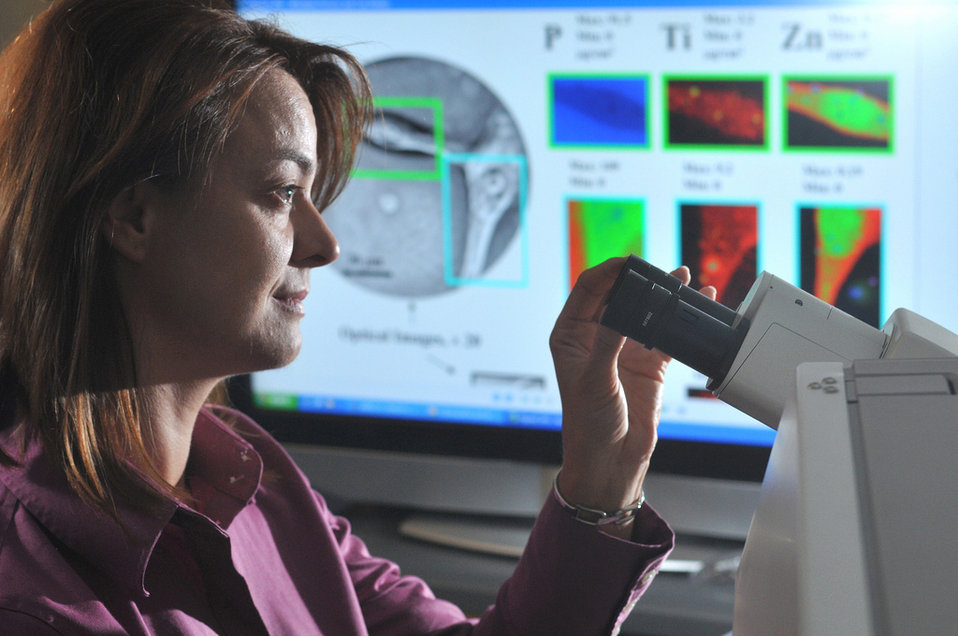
Argonne scientist Elena Rozhkova examines brain cancer cells under a microscope. Rozhkova, along with researchers from the University of Chicago, have developed a way to attach an antibody to nanomaterial titanium dioxide and kill brain cancer cells.